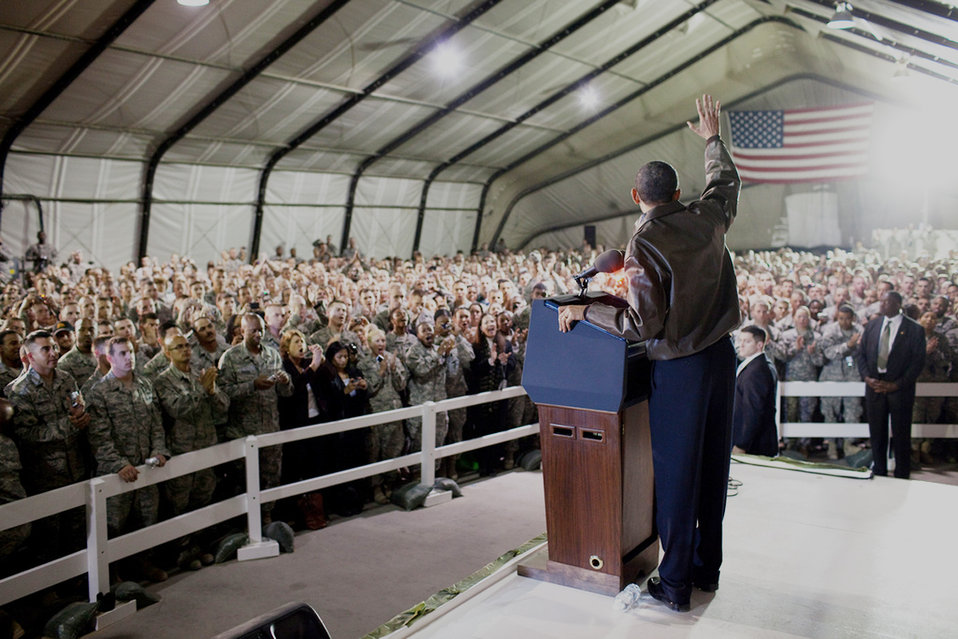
President Obama pays surprise visit to troops in Afghanistan

President Barack Obama waves to U.S. troops March 28, 2010, at Bagram Airfield, Afghanistan.